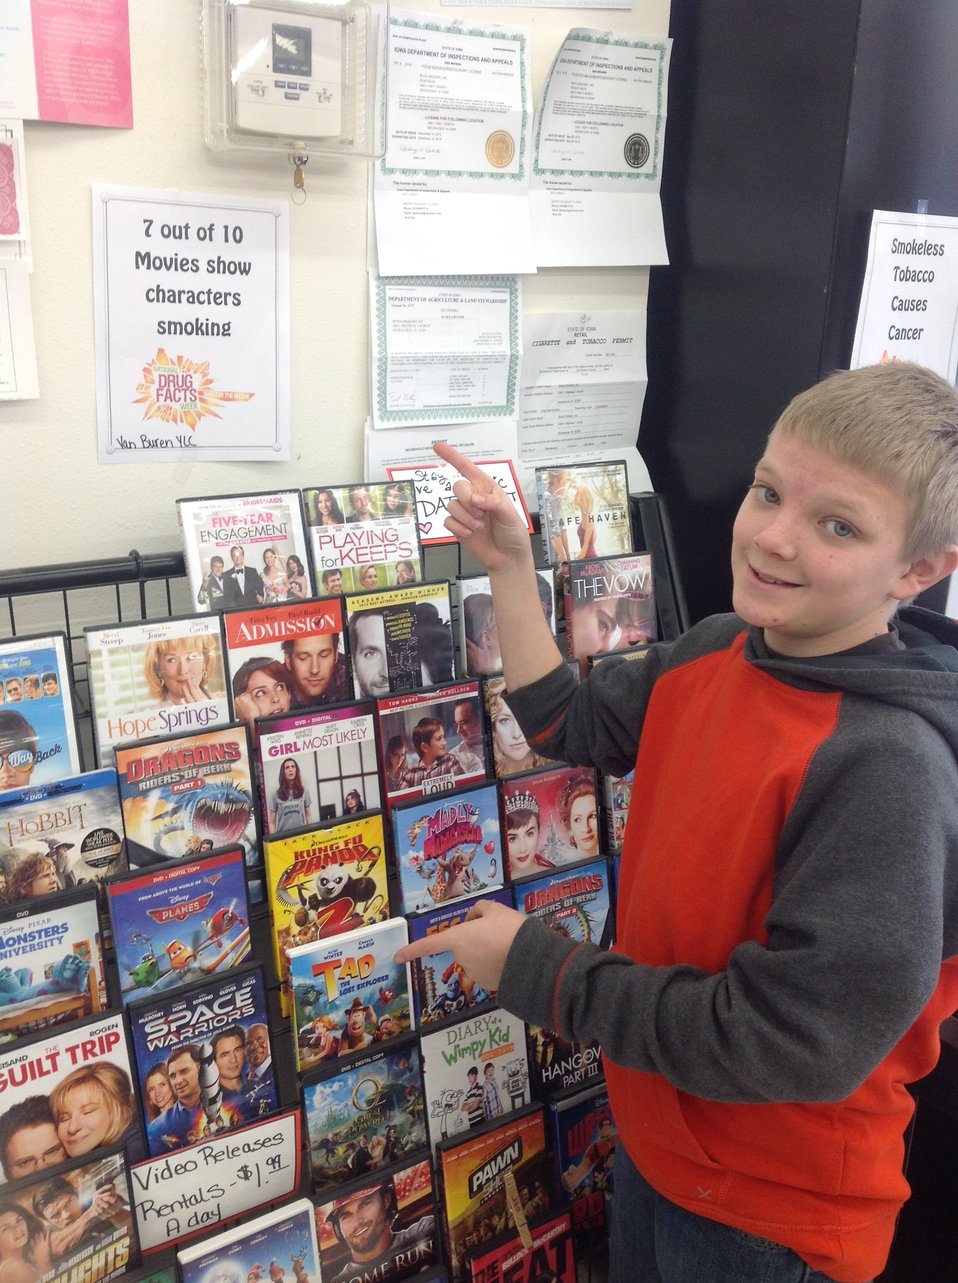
Getting the Word Out

Teenagers from the Van Buren County SAFE Coalition's, Youth Leadership Council (YLC) in Keosauqua, Iowa participate in various events during National Drug Facts Week, 2014.